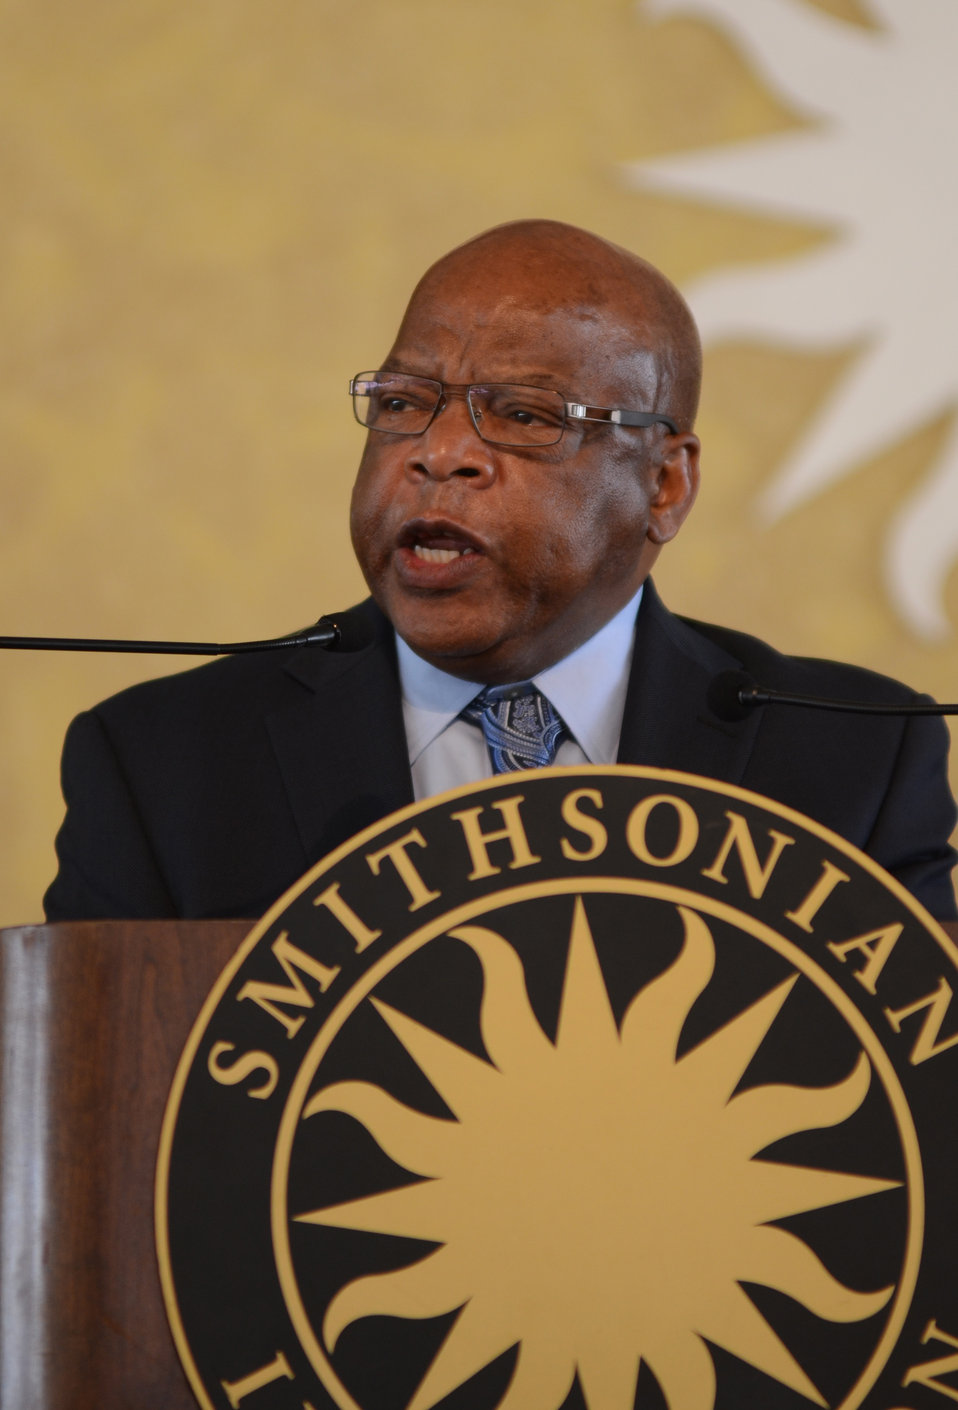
Georgia Congressman John Lewis speaks at the opening ceremony for the 2012 Smithsonian Folklife Festival in Washington, D.C. on Wednesday, June 27, 2012. This year’s festival features three themes; “Creativity and Crisis” celebrates the 25th anniversary of the AIDS Memorial Quilt, “Citified,” explores the rich culture and community of neighborhoods east of the Anacostia, and the third “Campus and Community” celebrates 150 years of USDA and the Land-Grant university system.